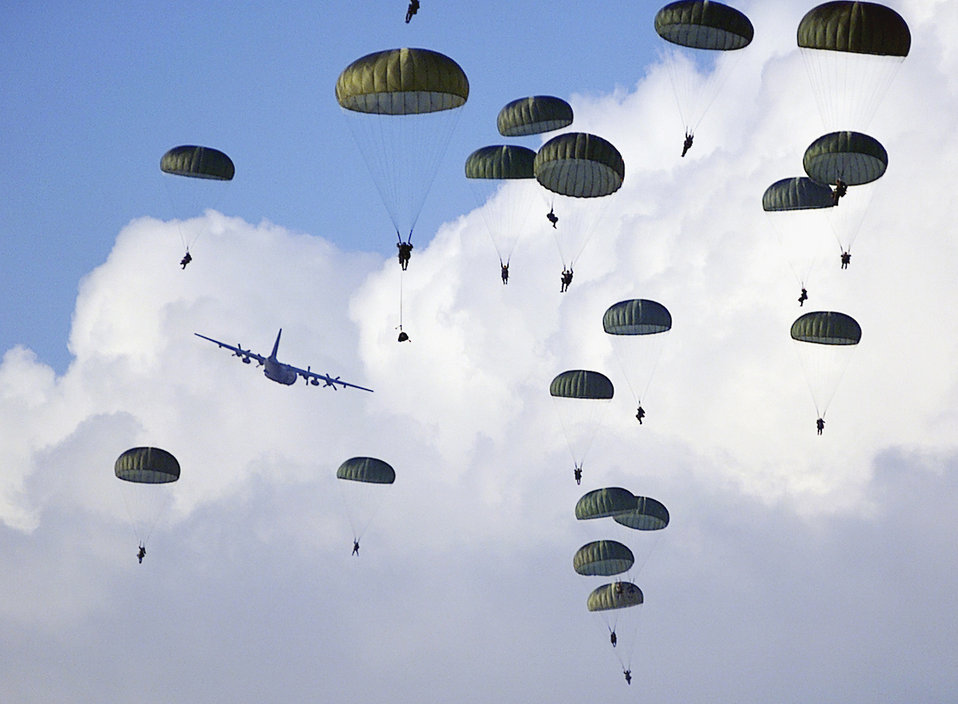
In the sky above

MANIAGO, Italy -- The skies are peppered with members of an airborne combat team from the Army's 1st Battalion, 508th Infantry, out of Vicenza, Italy, as they conduct a training jump in January.